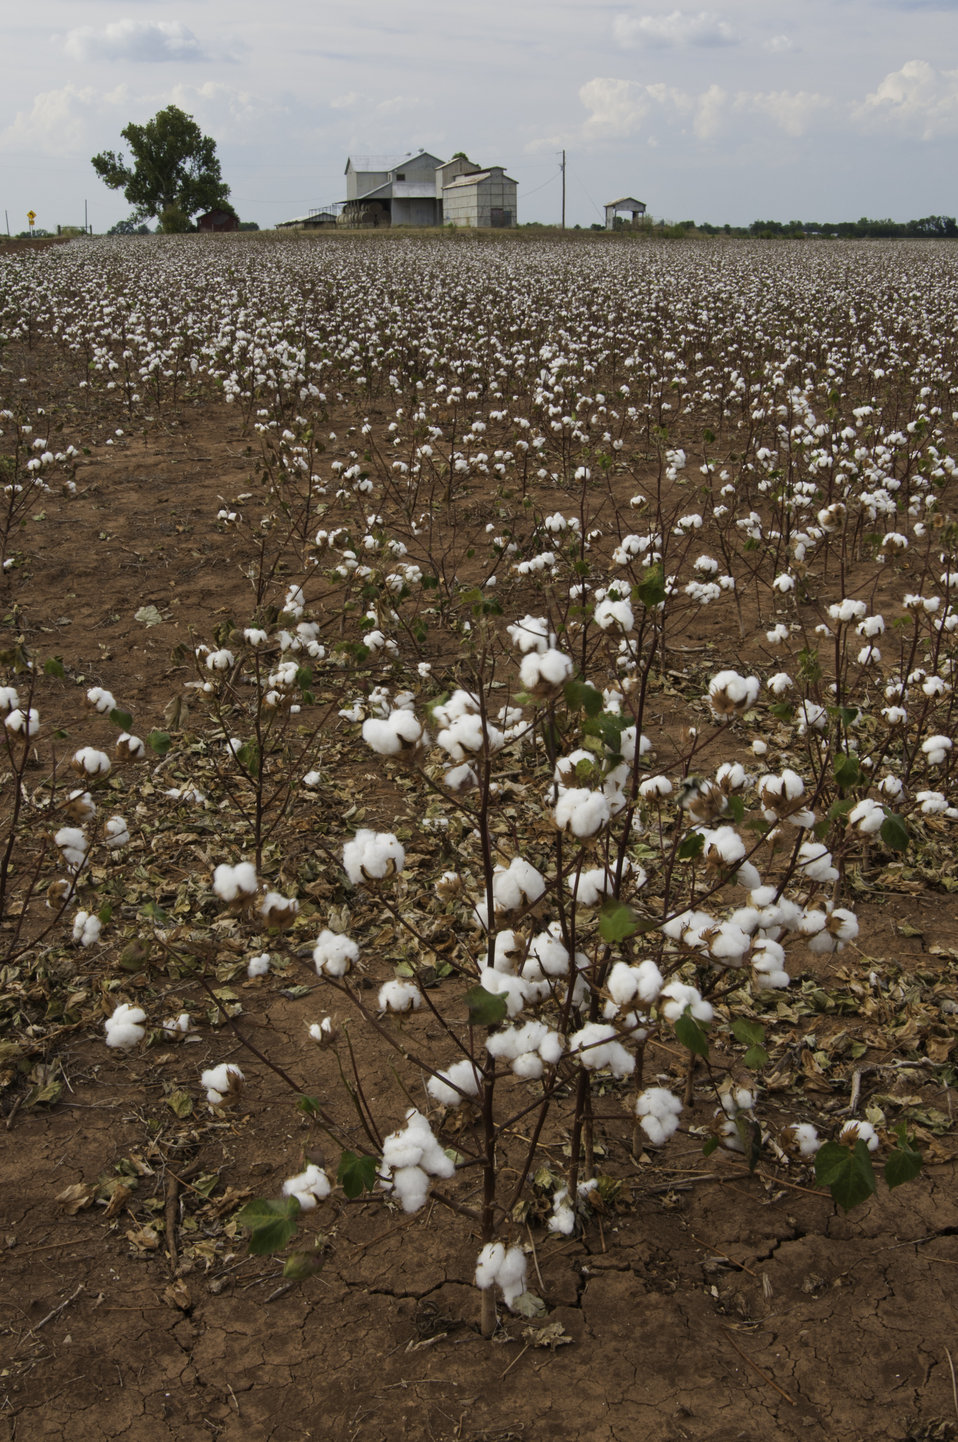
Dry Land cotton grows on a farm in Navasota, TX on Aug. 23, 2013.